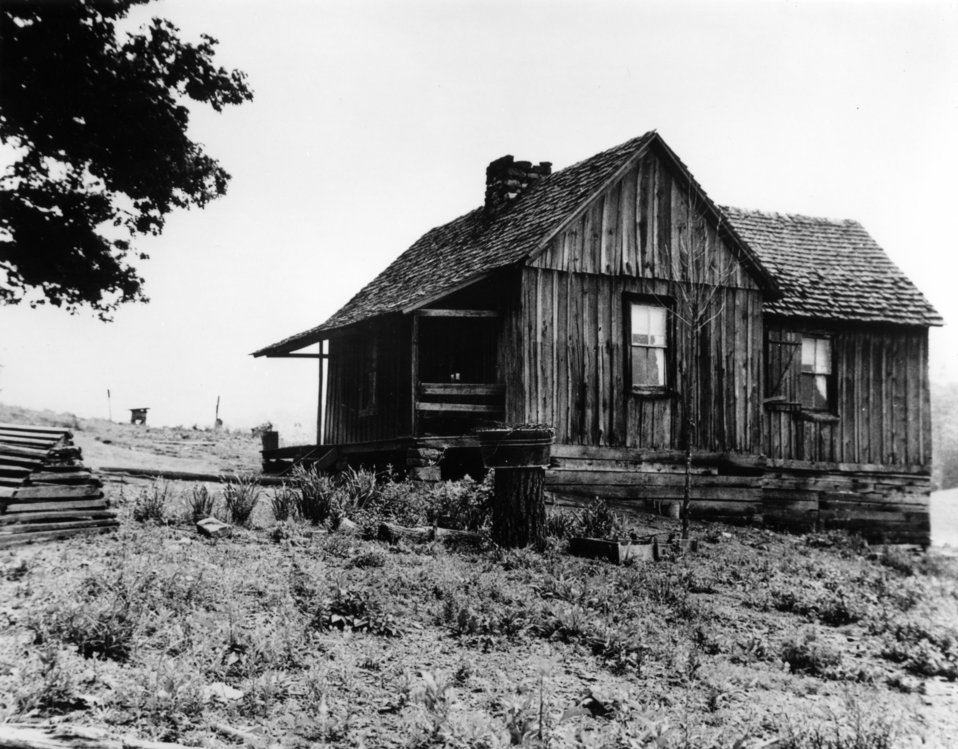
Early settlers at Oak Ridge